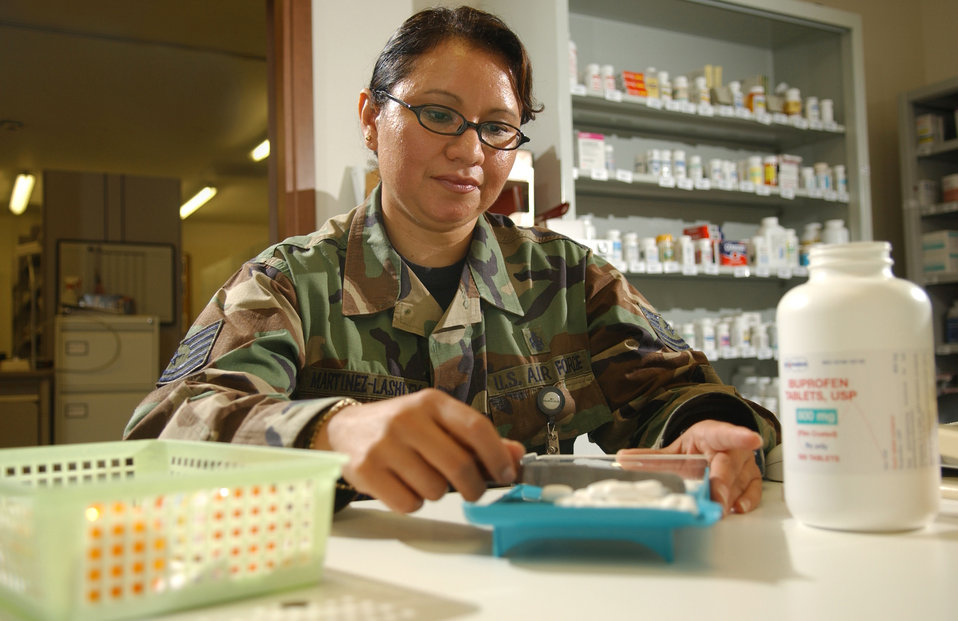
Sergeant filling prescriptions on Air Force birthday

Tech. Sgt. Brenda Martinez-Lashley, 31st Medical Group pharmacy craftsman, counts tablets before dispensing them to a patient at Aviano Air Base, Italy, Sept. 18. The 31st Medical Support Squadron Pharmacy staff fills more than 70,000 prescriptions annually.